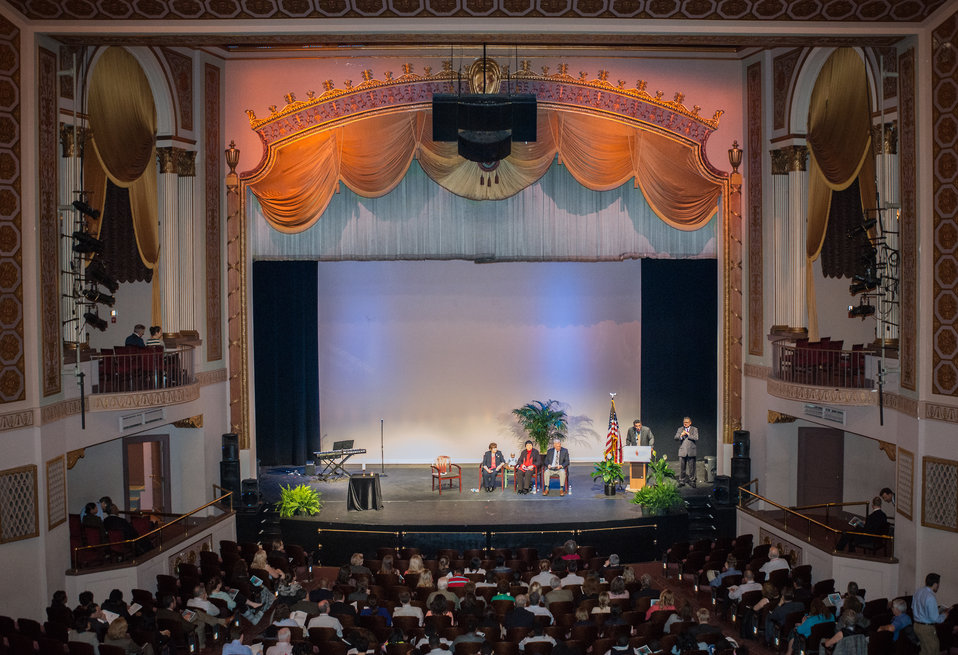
The 2013 Federal Inter-Agency Holocaust Remembrance Day, at the Lincoln Theater, on Wednesday, April 17, 2013, in Washington, D.C. The moderator is United States Holocaust Memorial Museum Division of the Senior Historian Director Peter Black, Ph.D., at podium or seated on left, and the guest speakers, left to right, are Theresienstadt Concentration Camp Czech Jewish Holocaust Survivor Ela Stein-Weissberger, and German Jewish Holocaust Survivor Inge Auerbacher; and Dachau Concentration Camp Liberator Jimmy Gentry. Since the 1979 President’s Commission on the Holocaust, an annual proclamation signed by the President of the United States recognizes the importance of remembering the atrocities of the Holocaust that should never be forgotten or be ignored.